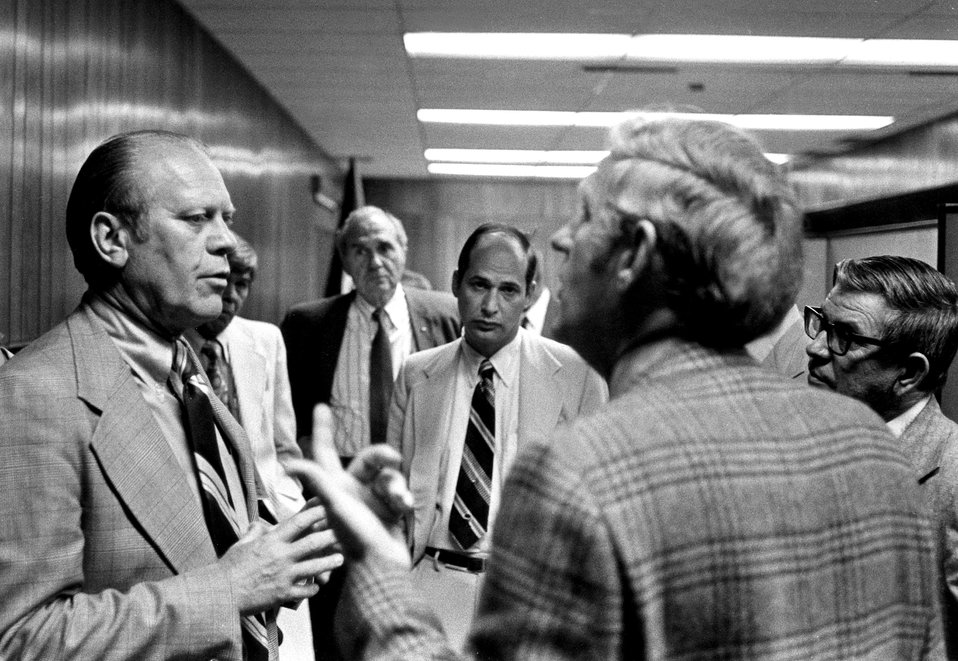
Commissioner William E. Kriegsman assisted in the briefing of (then) Vice President Gerald R. Ford during his July 12, 1974, visit to the AEC's Los Alamos Scientific Laboratory in New Mexico.